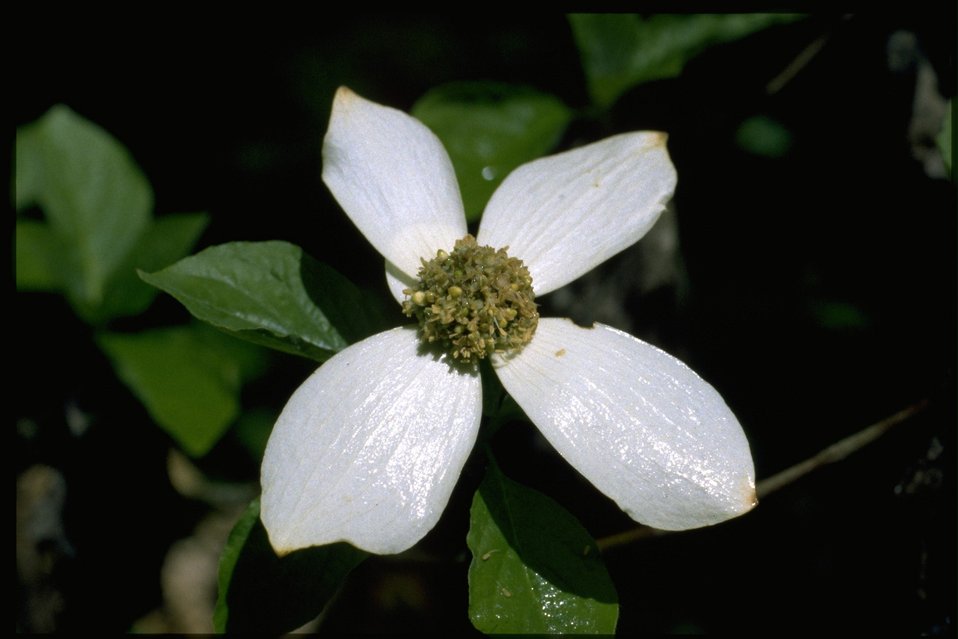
Closeup shot of Cornus canadensis.